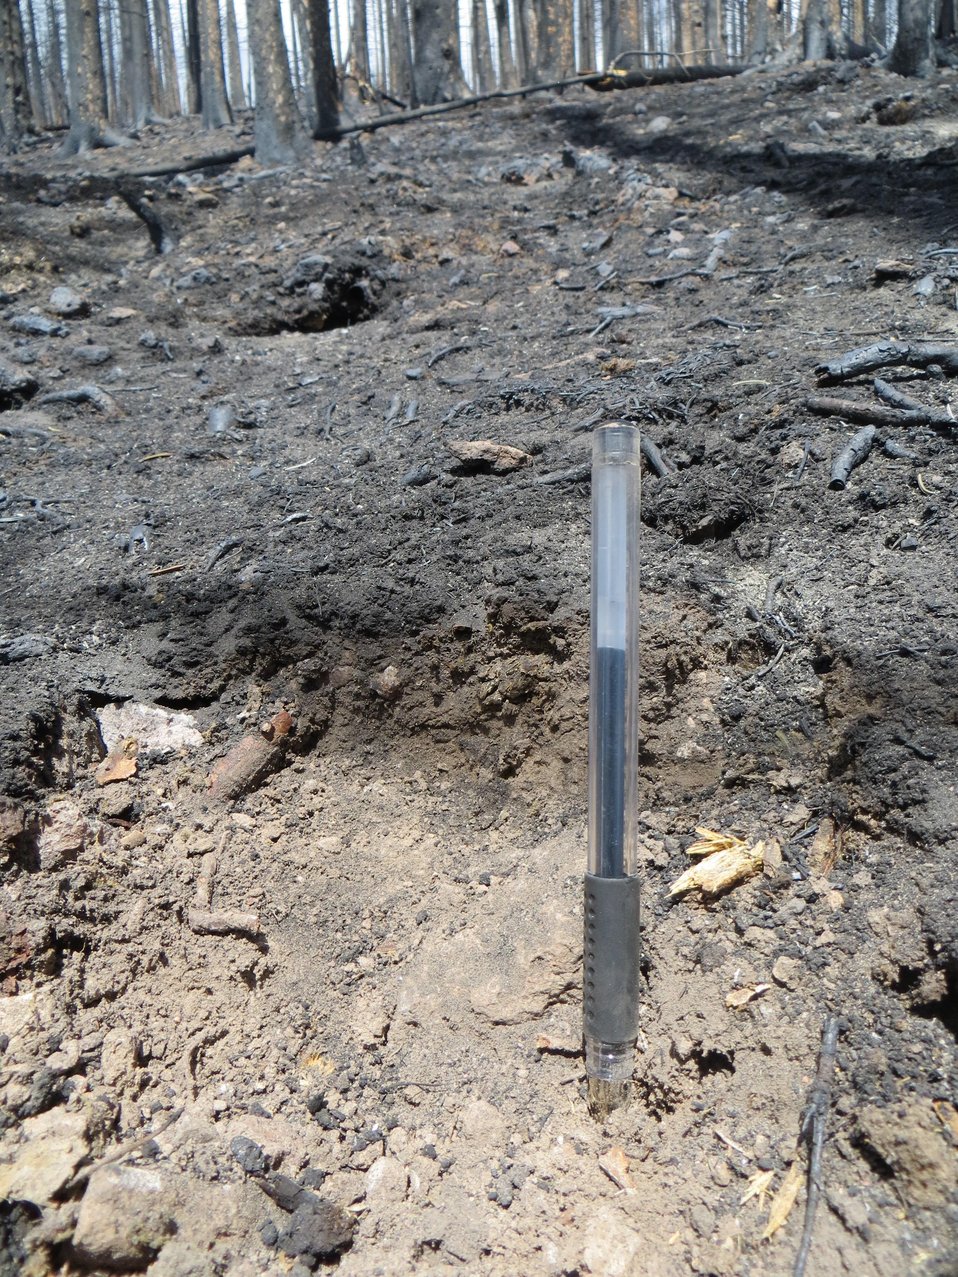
Burned Area Emergency Response (BAER) team examines the burned area after the Thompson Ridge Fire in the Sante Fe National Forest in New Mexico. The Thompson Ridge Fire in the Sante Fe National Forest approximately 10 miles north of Jemez, NM began on May 31, 2013 by human ignition consumed over 23, 965 acres. BAER is a rapid assessment of burned watersheds by a BAER team to identify imminent post-wildfire threats to human life and safety property and critical natural or cultural resources on National Forest System lands and take immediate actions to implement emergency stabilization measures before the first major storms. Fires result in loss of vegetation exposure of soil to erosion and increased water runoff that may lead to flooding increased sediment debris flows and damage to critical natural and cultural resources. BAER team members implement seeding and mulching installation to prevent erosion, erect temporary water run-off control structures that will protect recovering areas, and installation of warning signs, replace safety related facilities, remove safety hazards, prevent permanent loss of habitat for threatened and endangered species, and prevent the spread of noxious weeds and protect critical cultural resources.